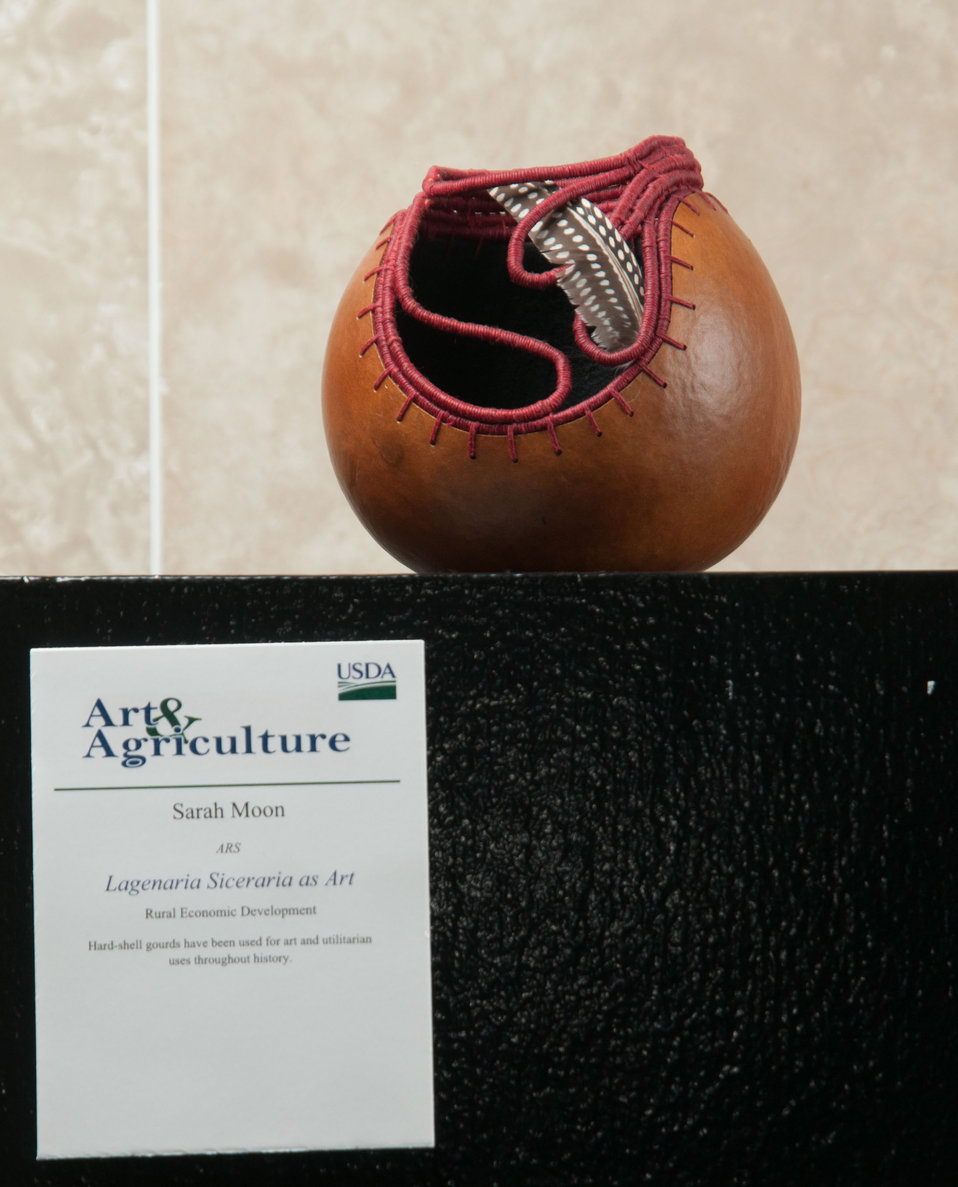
Online Viewer's Choice entries of the 2013 Art & Agriculture, Tuesday, July 9, 2013, in the South Building, Washington, D.C. Themes were expressed by employees from across the department and the contest was open to full-time and part-time USDA employees. Winning artwork will be displayed till the end of the year. U.S. Artistic expression is a creative outlet that is vital for an individual to grow and develop.